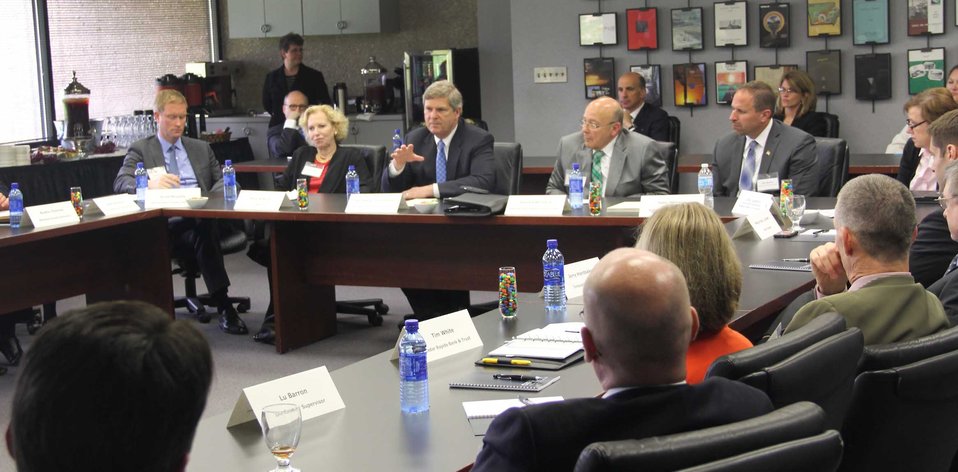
Agriculture Secretary Tom Vilsack announces the creation of a new investment fund that will help propel the growth of small businesses across rural America during a roundtable discussion with lenders and community leaders in Cedar Rapids, IA on Apr. 21, 2014. The new Rural Business Investment Company (RBIC) will be managed by Advantage Capital Partners with partners from eight Farm Credit institutions.